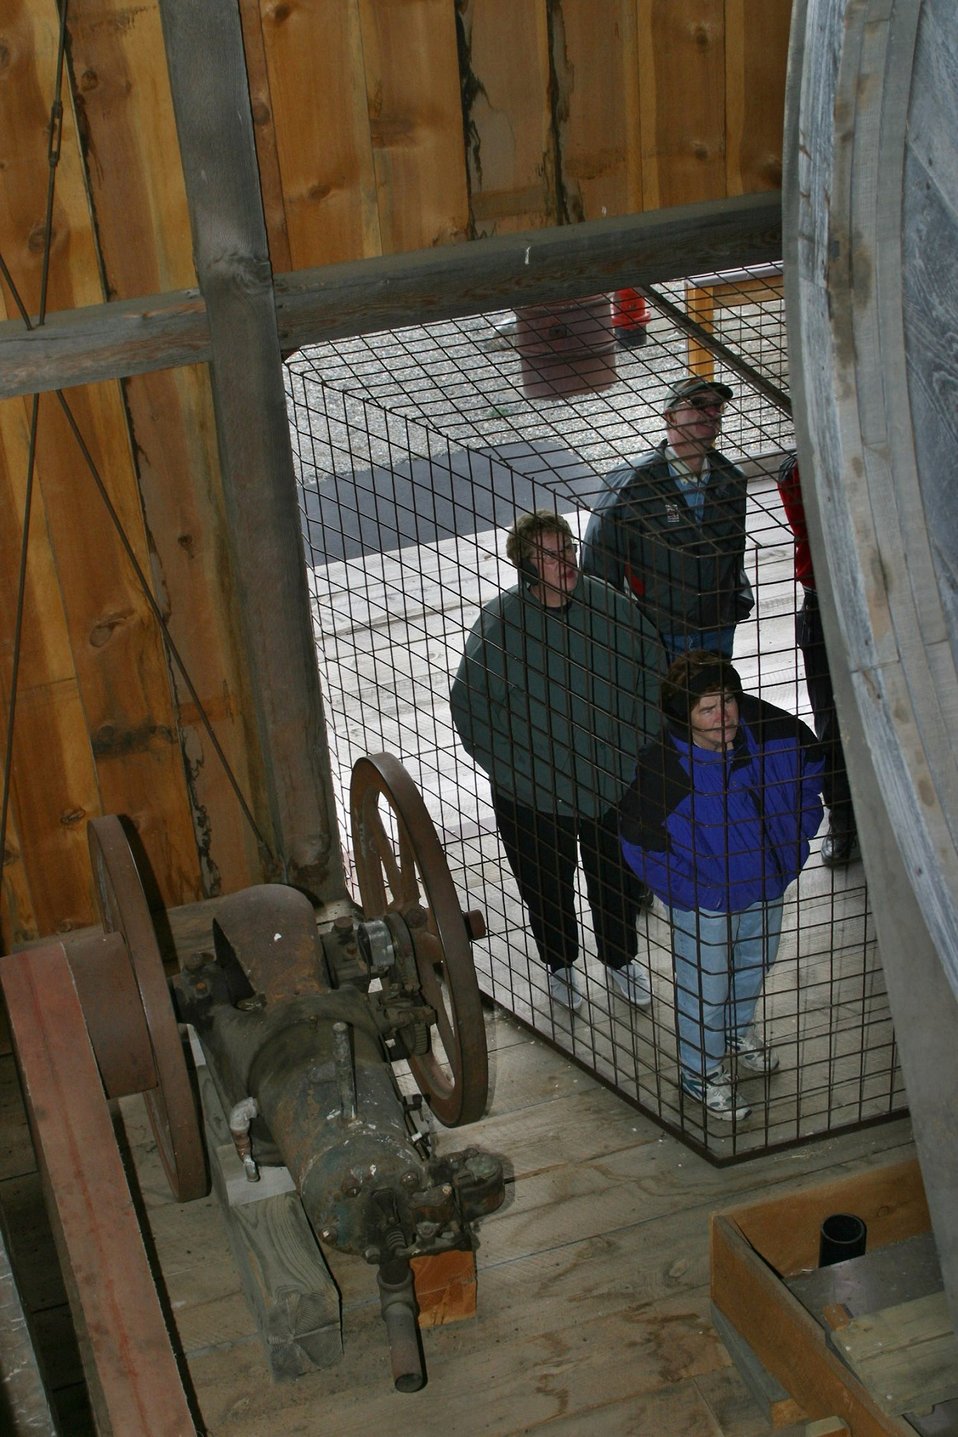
A replica of the Rabbit Mine 1926 stamp mill near Greenhorn in the Blue Mountains of eastern Oregon. It is used to interpret the importance of mining in western history, and the relationship of gold mining to the westward migration story.